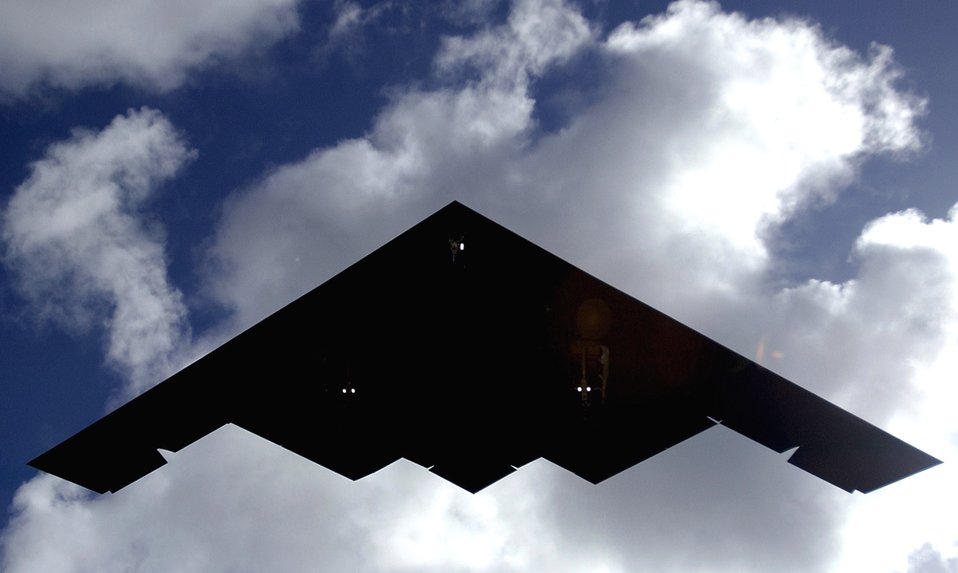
B-2s arrive at Andersen

A B-2 Spirit lands at Andersen Air Force Base, Guam, on Sunday, April 30, 2006. B-2s are replacing the B-1B Lancers at Andersen as part of the continuous bomber rotation.